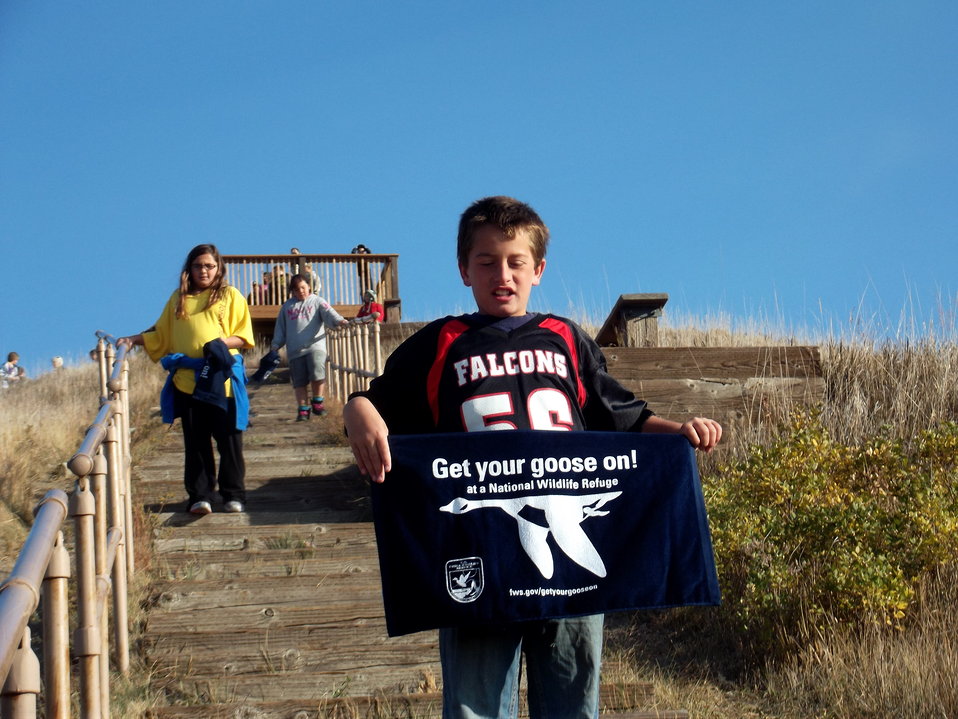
Get Your Goose On!

Photo taken at Sullys Hill National Game Preserve.